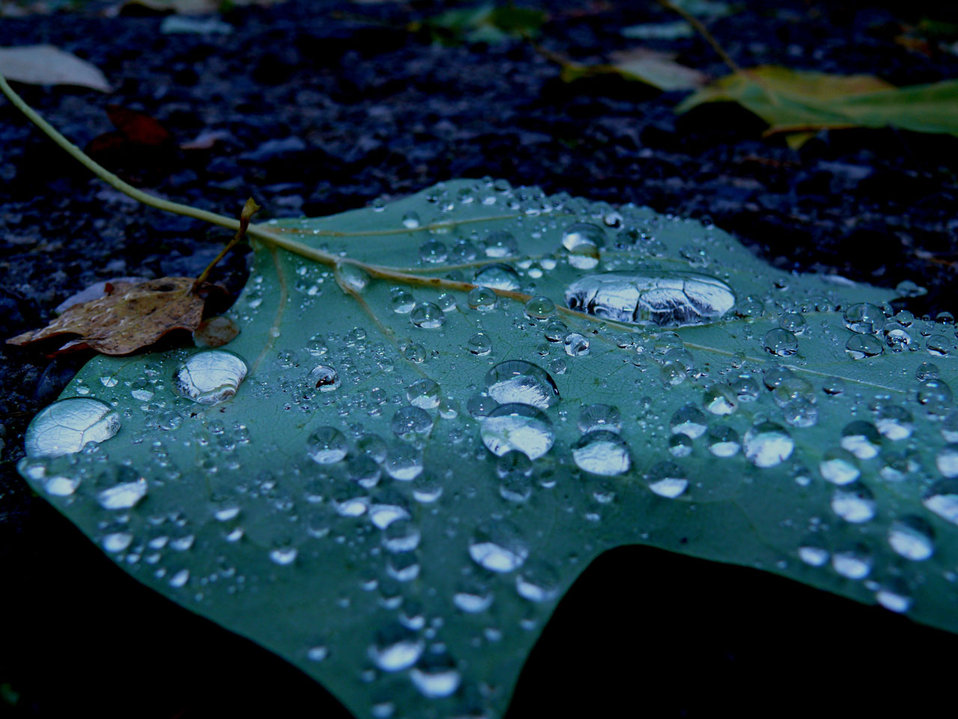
Drops on leaf.